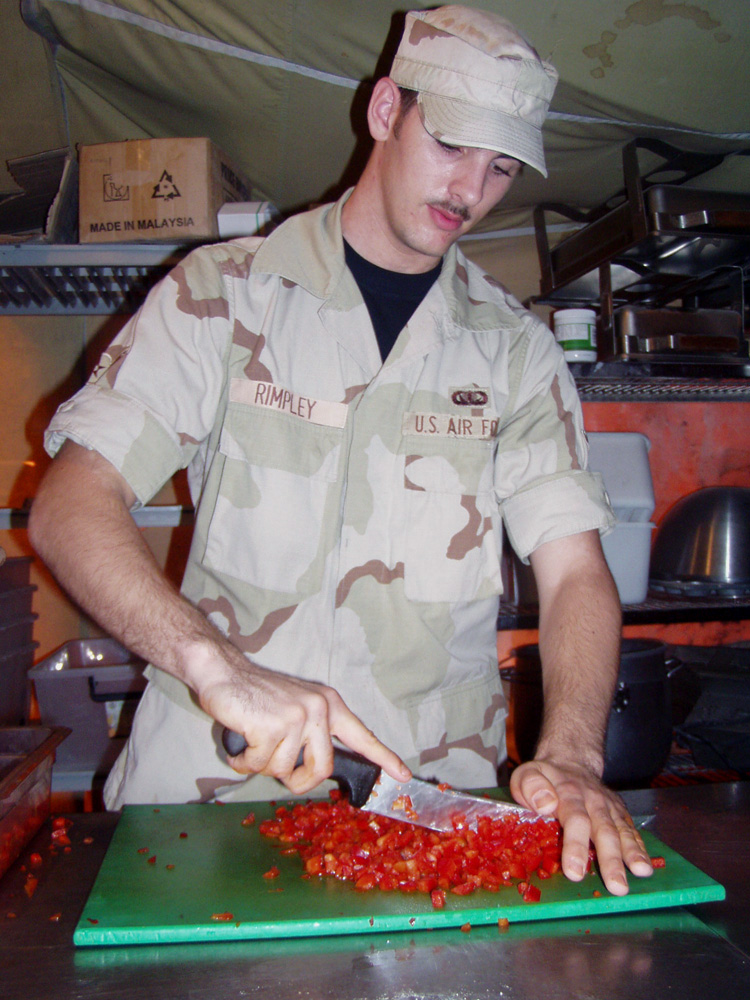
Slicin' and dicin'

AL UDEID AIR BASE, Qatar -- Airman Kyle Rimpley chops red peppers for the lunchtime meal in the Big Apple Dining Facility here Oct. 17. Weekly, the facility's staff feeds more than 15,000 hungry coalition members throughout the day. Rimpley is a food services specialist assigned to the 379th Expeditionary Services Squadron and is deployed from the 3rd Services Squadron at Elmendorf Air Force Base, Alaska.